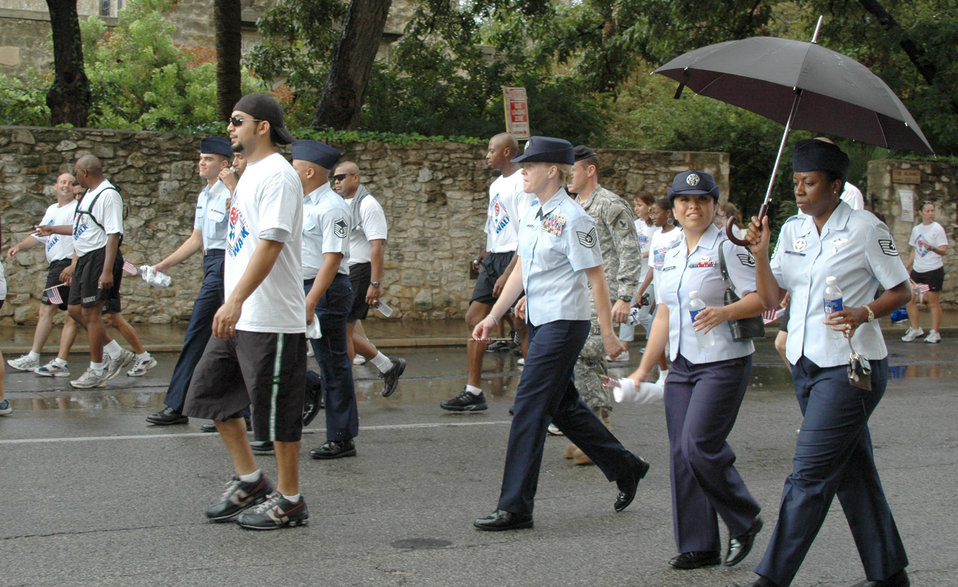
Rain doesn't stop San Antonio's Freedom Walk

More than 1,200 servicemembers, civilians and children braved the rain in San Antonio to participate in the America Supports You Freedom Walk Sept. 11 to pay tribute to those who died on Sept. 11, 2001.